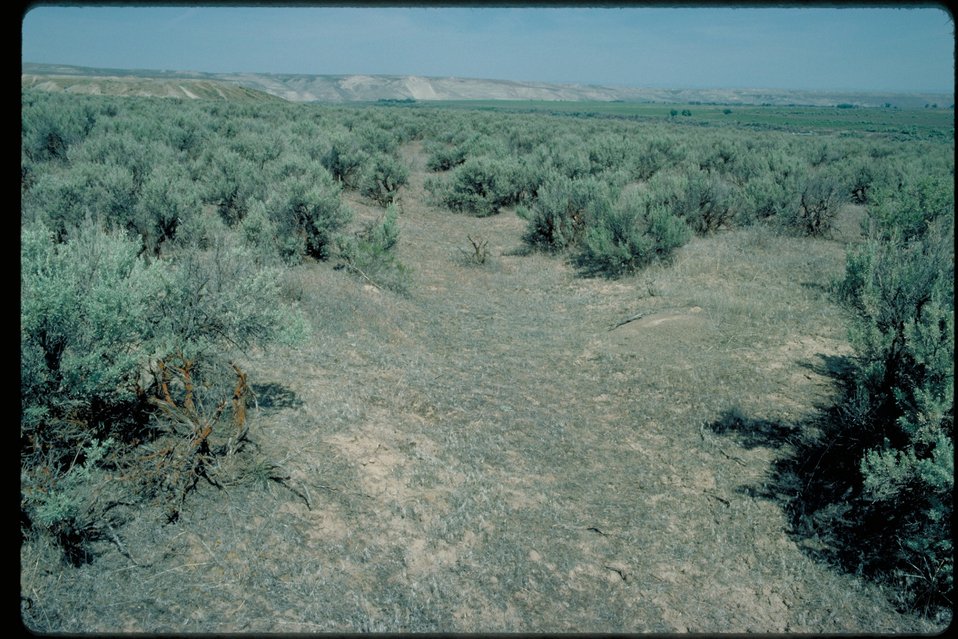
Oregon Trail west of Owsley Bridge Cultural resource Historic area LSRD Lower Snake River District